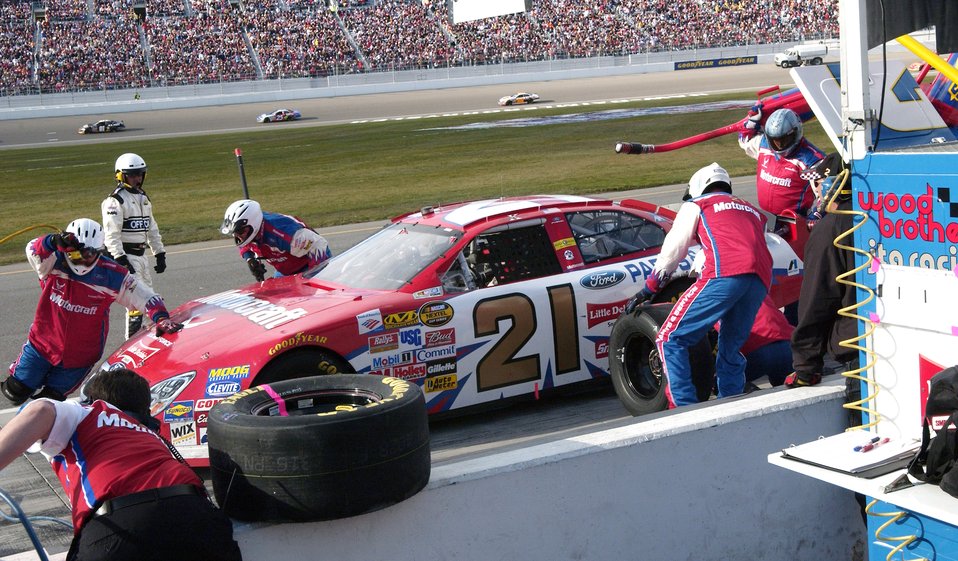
NASCAR flies

The pit crew works on the #21 Ford Fusion car during NASCAR UAW-DaimlerChrysler 400 at the Las Vegas Motor Speedway, Las Vegas, Nev., Sunday, March 12, 2006. Ken Schrader the driver; day ended with engine problems on lap 187 and finished in 41st place.